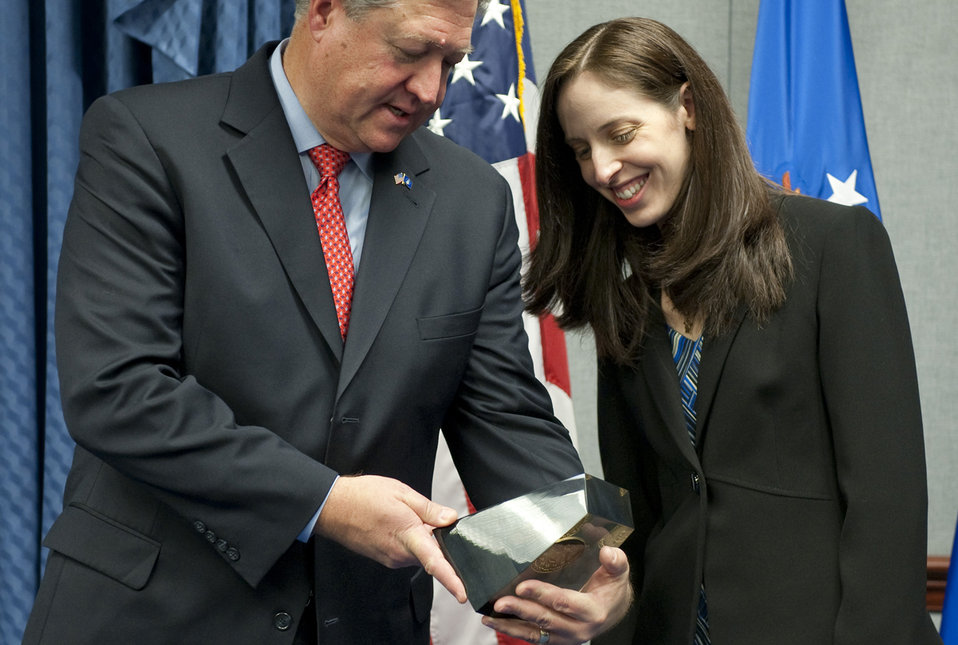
2010 Harold Brown Award

Secretary of the Air Force Michael Donley (left) presents the 2010 Harold Brown Award to Dr. Candace Lynch (right) during a ceremony in the Pentagon on Dec. 15, 2010. The award was named after Harold Brown who served as Secretary of the Air Force from 1965-1969. Dr. Lynch is the first female recipient of the award since its inception in 1969.